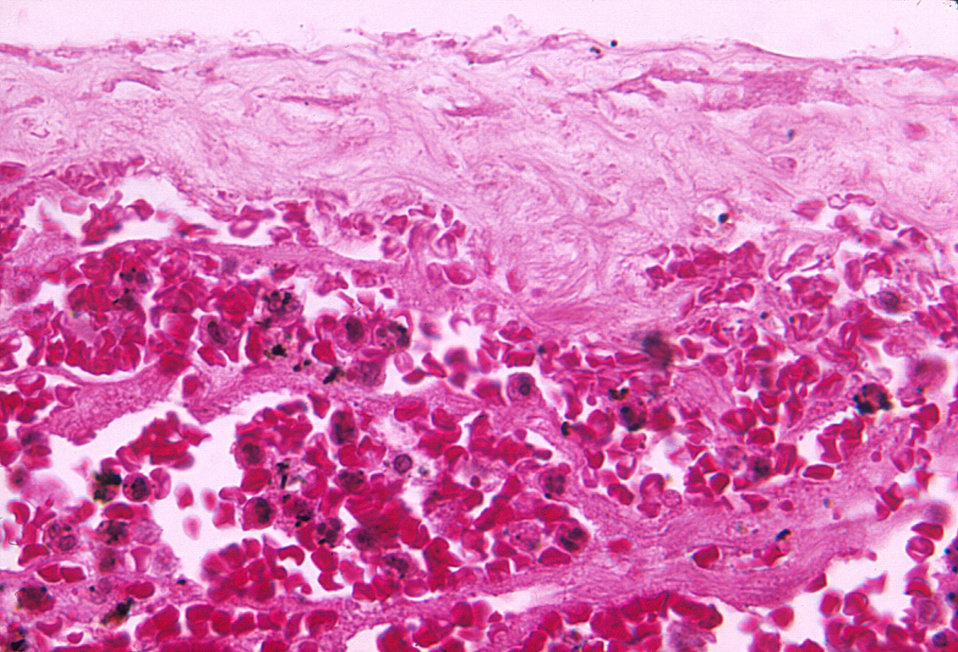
Meningeal hemorrhage due to anthrax.